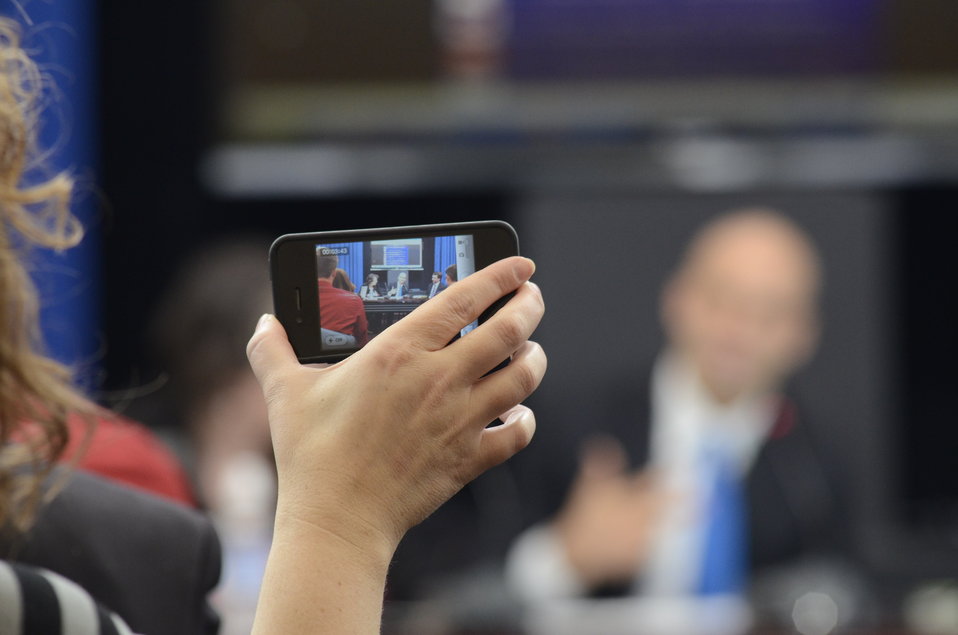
Agriculture Deputy Secretary Kathleen Merrigan (behind table on left), White House Personal Chef and Food Policy Advisor Sam Kass (at table w/blue tie) and White House Office of Public Engagement Director Jon Carson (at table, right) during a Know Your Farmer Compass event that used twitter social media to continue the National Conversation on Local and Regional Food projects and how they offer economic opportunities to local farmers, ranchers and food entrepreneurs. Using the new web-based Know Your Food Compass, the conversation covered many aspects about food, such as infrastructure, stewardship, local meat and poultry, Healthy food access, careers in agriculture and local food knowledge. The virtual conversation took place at the White House, and Twitter was used to expand the conversation worldwide, from Washington, D.C., on Monday, March 5, 2012. Unlike most events where mobile communication devices are asked to be turned off, here it was asked that they remain on allowing people to have social media conversations.